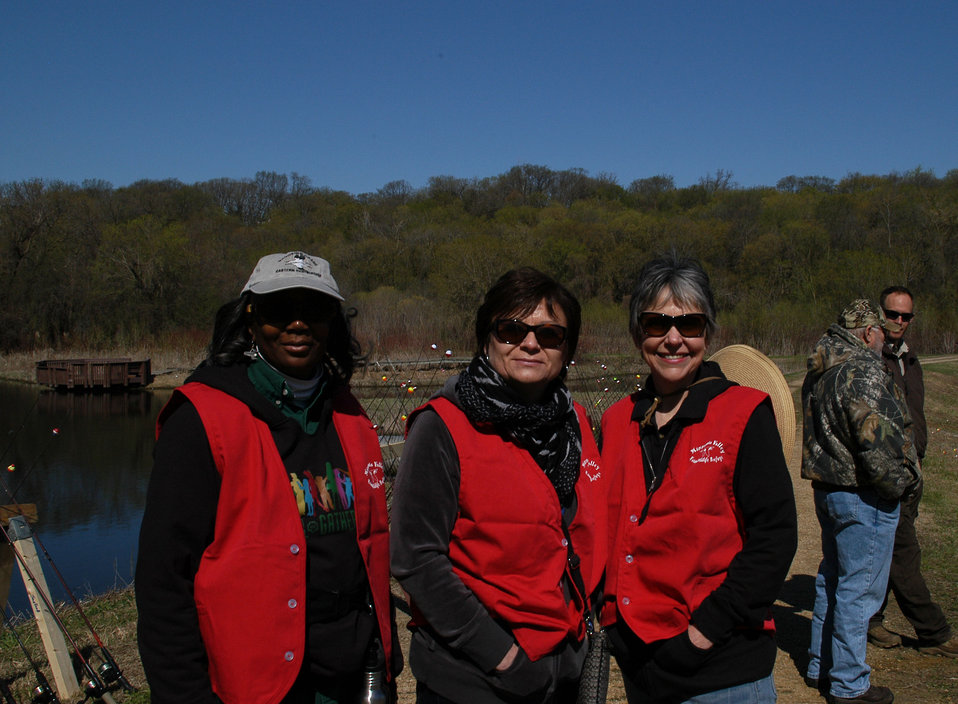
Volunteers Assist Kids at the Open Fishing Station

Volunteers from the U.S. Fish and Wildlife Service suited up in red to help the students learn how to cast at open fishing.